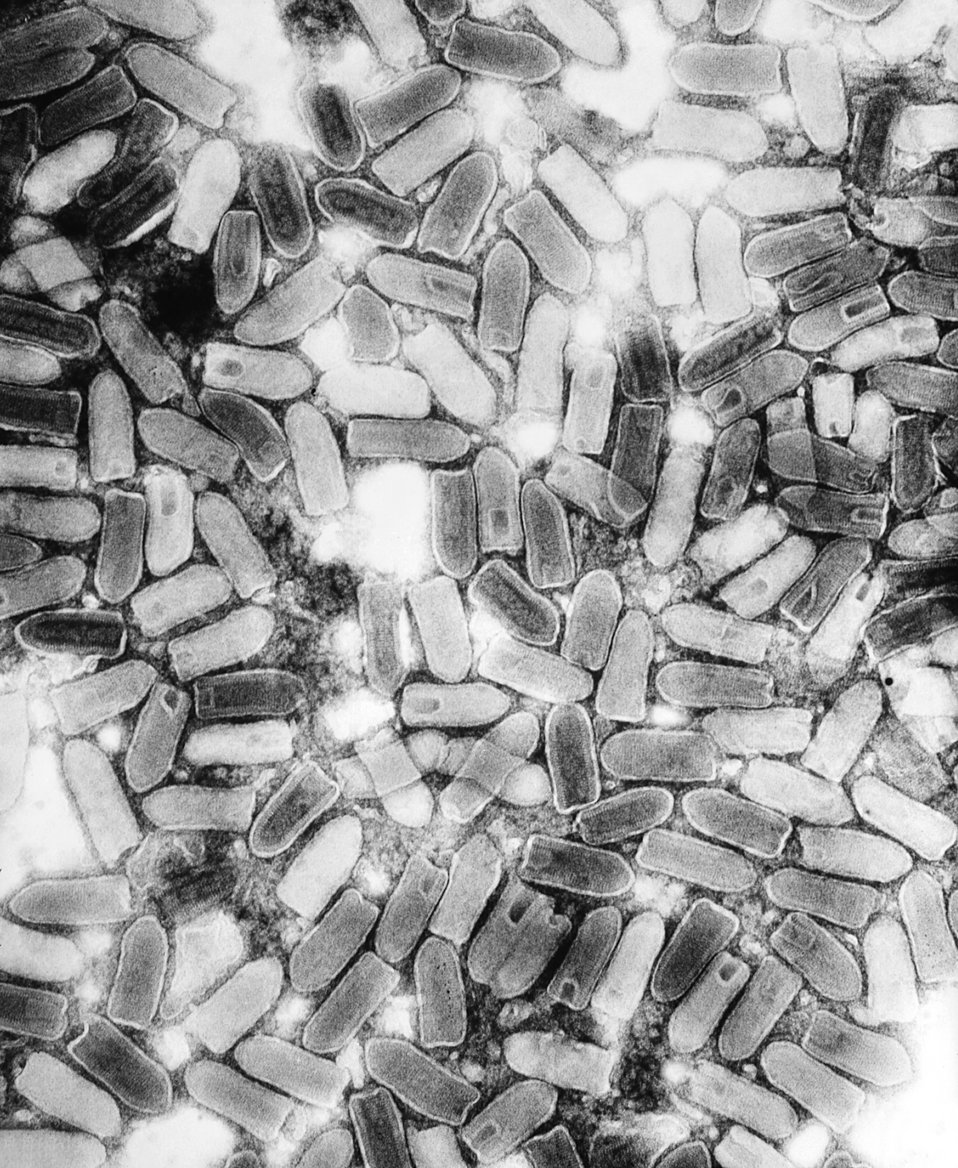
This negatively-stained transmission electron micrograph (TEM) revealed the presence of numerous negative-sense, single-stranded RNA ((-) ssRNA) vesicular stomatitis virus (VSV) virions.